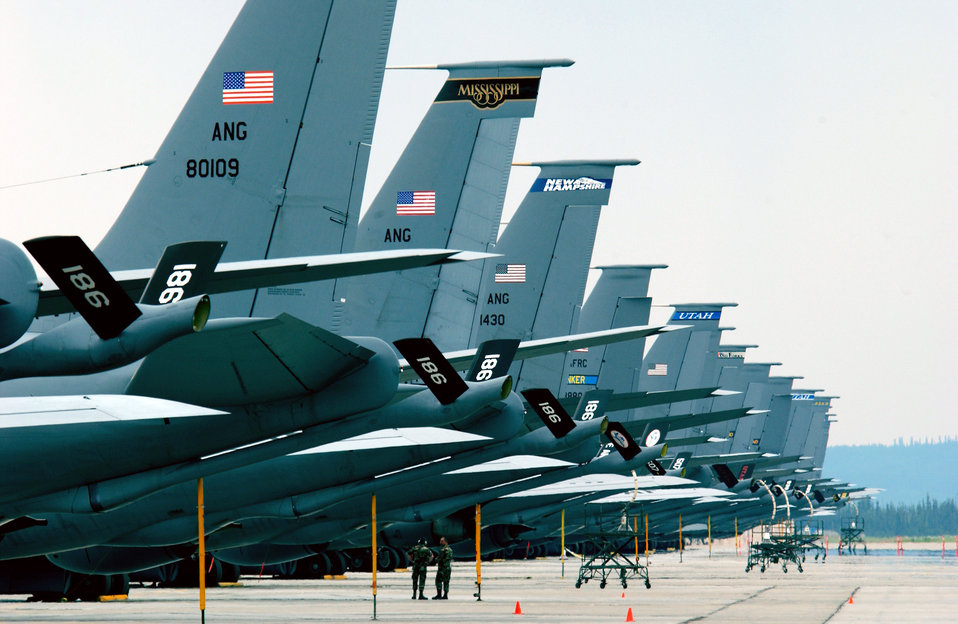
New tanker to bring increased capabilities to warfighter

Numerous KC-135 Stratotankers sit on the flightline at Eielson Air Force Base, Alaska. Air Force officials announced the selection of the Northrop Grumman company to replace the aging KC-135 Stratotanker fleet. Up to 179 of the new air refuelers, called the KC-45A, is expected to enter the test phases in 2010 with the first mission-capable aircraft by 2013.